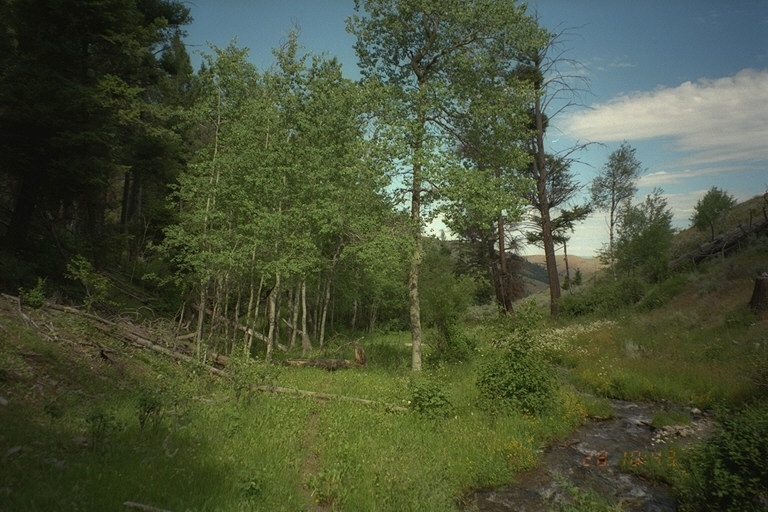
Riparian area Public Lands Salmon Field Office UCSC Upper Columbia Salmon Clearwater District